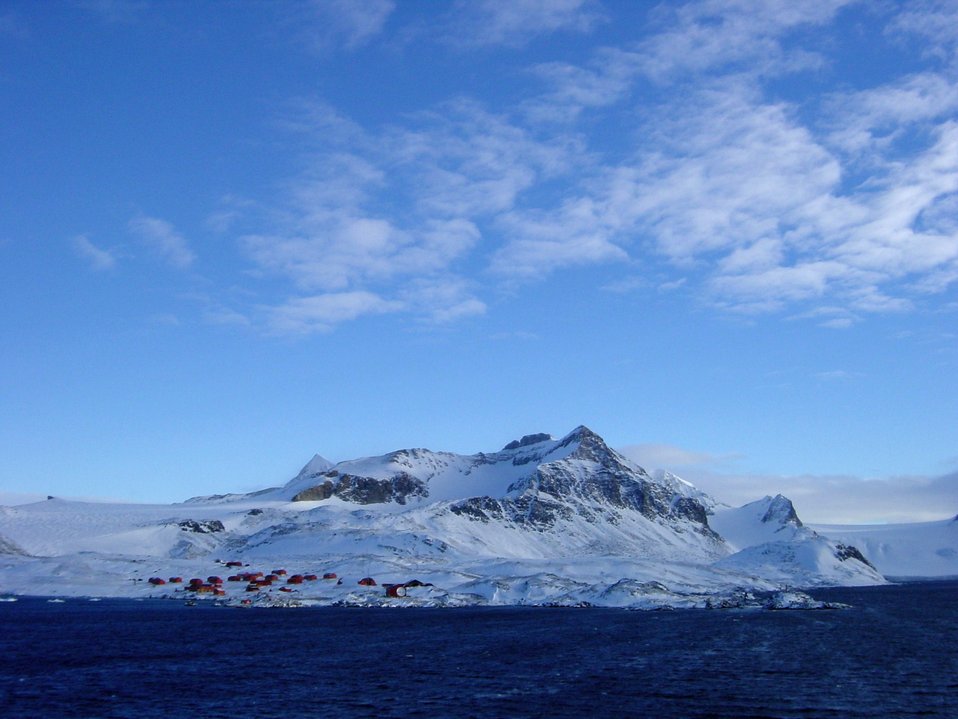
A base camp for observing penguins and marine mammals as well as other scientific observations.